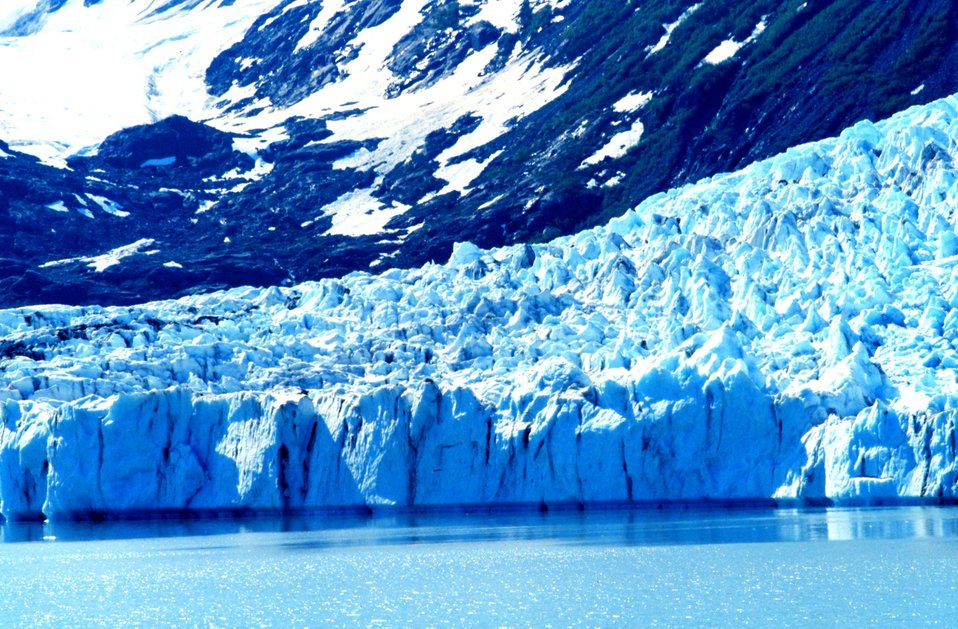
Glacier in Kenai Fjords